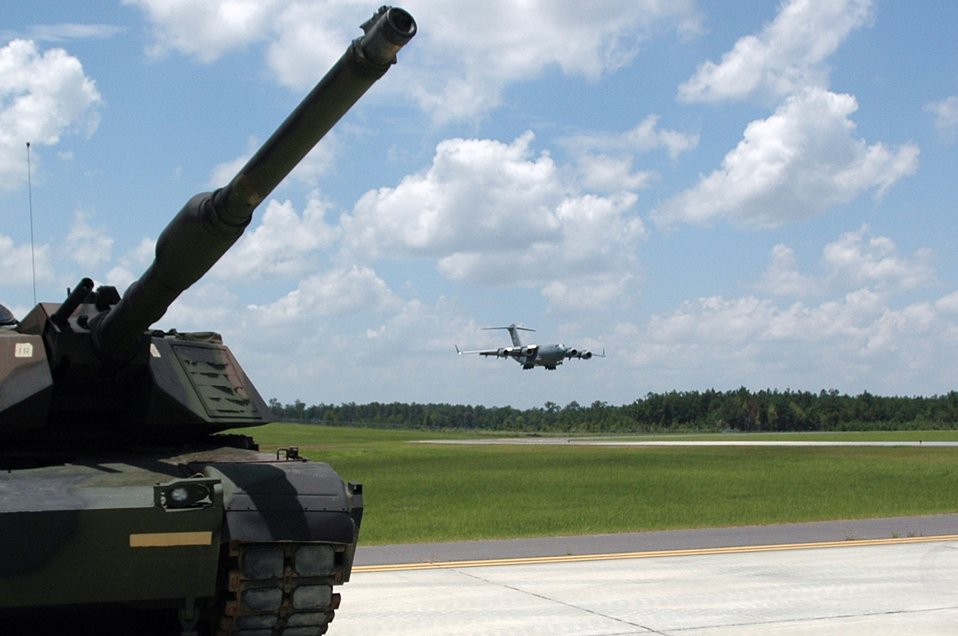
Air Guard opens new combat training runway

A C-17 Globemaster III from the Mississippi Air National Guard's 172nd Airlift Wing lands at the new assault training runway at Camp Shelby, Miss., July 9. The 210-acre Shelby Aux Field is one of only two facilities in the world designed for C-17 short-field landing operations. It was constructed to meet Air Force C-17 training requirements.